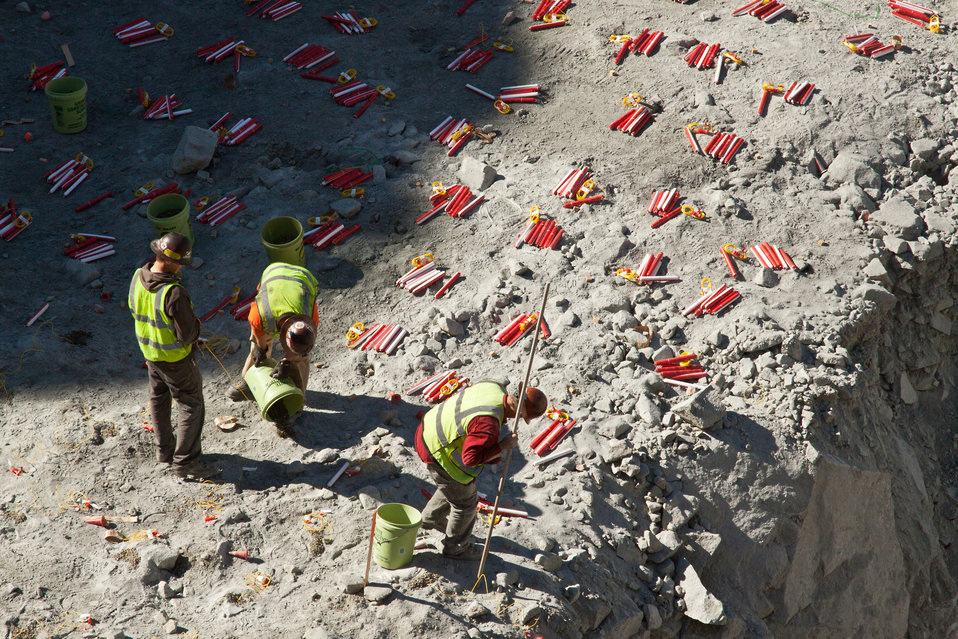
Blasting away for a new auxiliary spillway at Folsom Dam

Crews place explosive charges at the excavation site for the Folsom Dam auxiliary spillway in Folsom, Calif., Feb. 10, 2012. Crews detonate explosive charges daily to loosen bedrock for removal. To date, they've removed about 75 percent of the more than 315,000 cubic yards of earth that remains to be excavated. In total, 3.5 million cubic yards (about 175,000 large truckloads) of excavation is required. The Sacramento District is scheduled to complete blasting in May 2012 in preparation to construct the spillway's control structure, essentially a second dam. The spillway is scheduled to be ready for use in 2017 and will allow Folsom Dam to release water sooner and more safely, helping reduce flood risk for the Sacramento region.